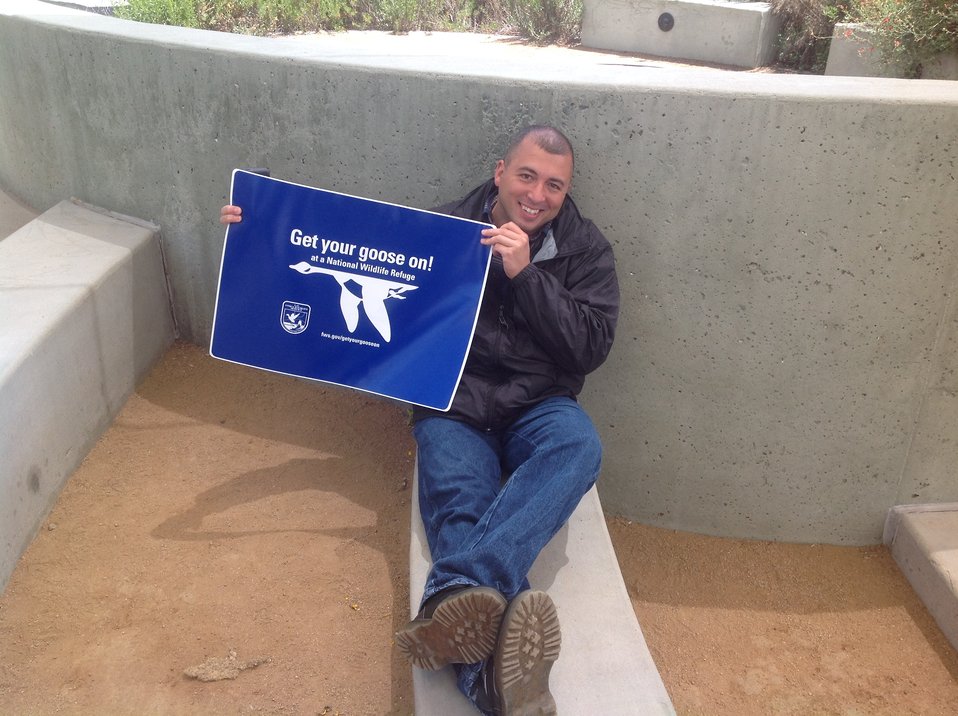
James Graves Gets His Goose On

Region 6 Transportation Coordinator, James Graves, gets his goose on while taking a load off at the Tijuana Slough NWR Visitor Center amphitheater.